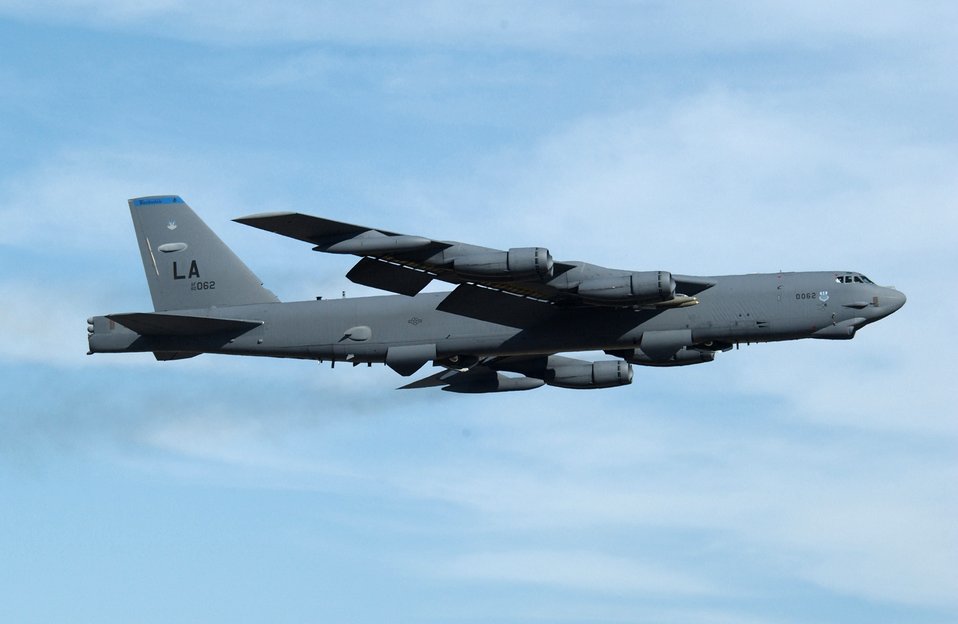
That's a big bomber!

BARKSDALE AIR FORCE BASE, La. -- A B-52H Stratofortress bomber, assigned with the 2nd Bomb Wing here, takes off on a training mission Dec. 2.